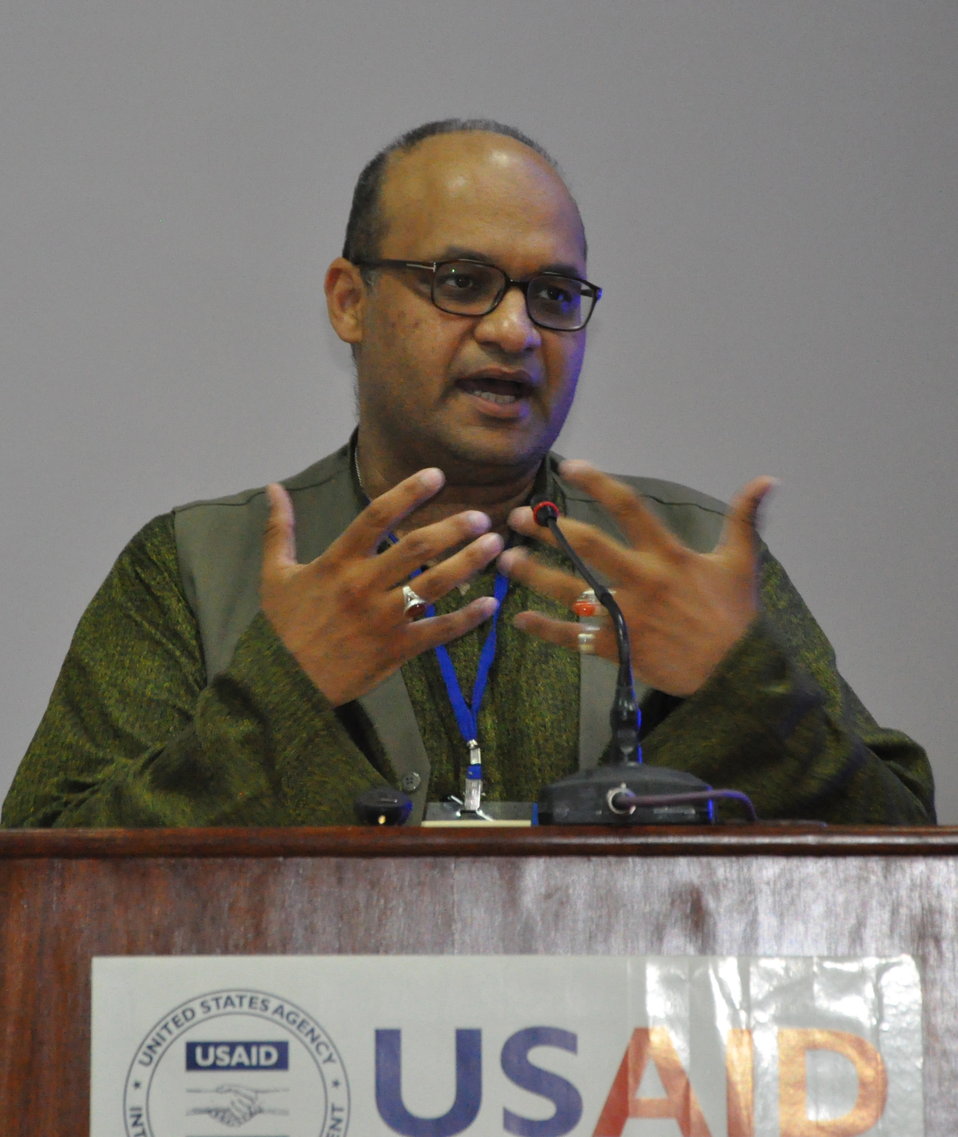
Dr. Faisal Bari of LUMS presenting the concluding remarks